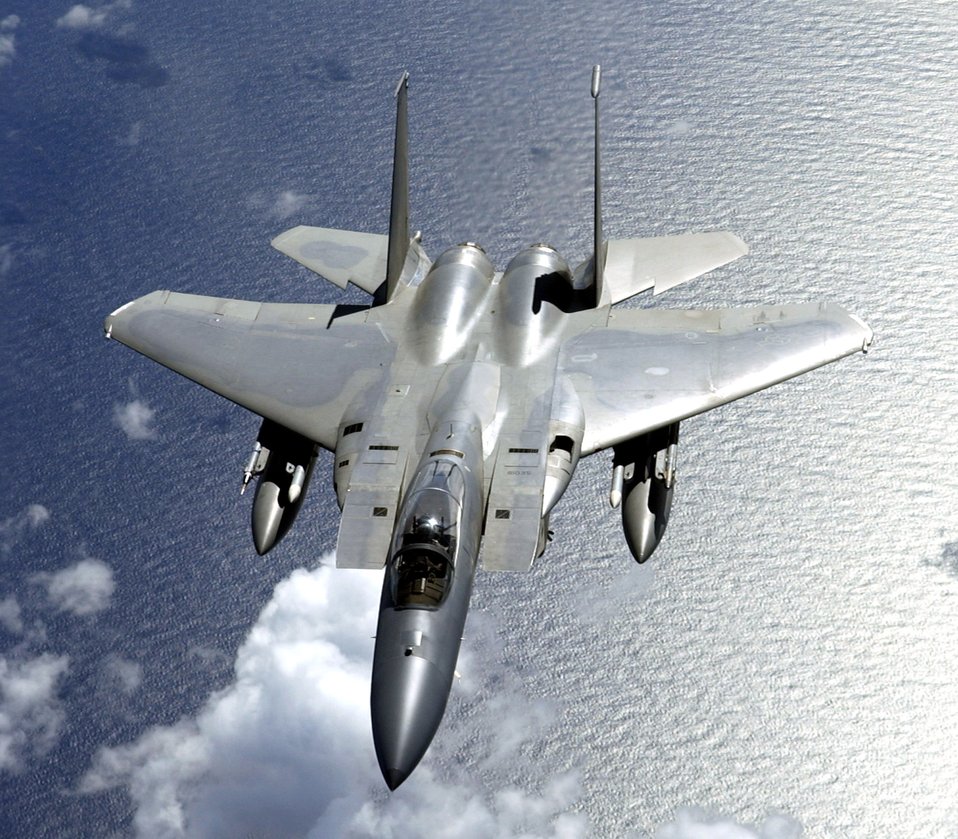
F-15s suspended

An F-15 Eagle flies over the Pacific during Valiant Shield Aug. 9. Following the crash of an F-15 Nov. 2., all non-mission essential F-15 flight operations has been suspended until completion of the investigation.